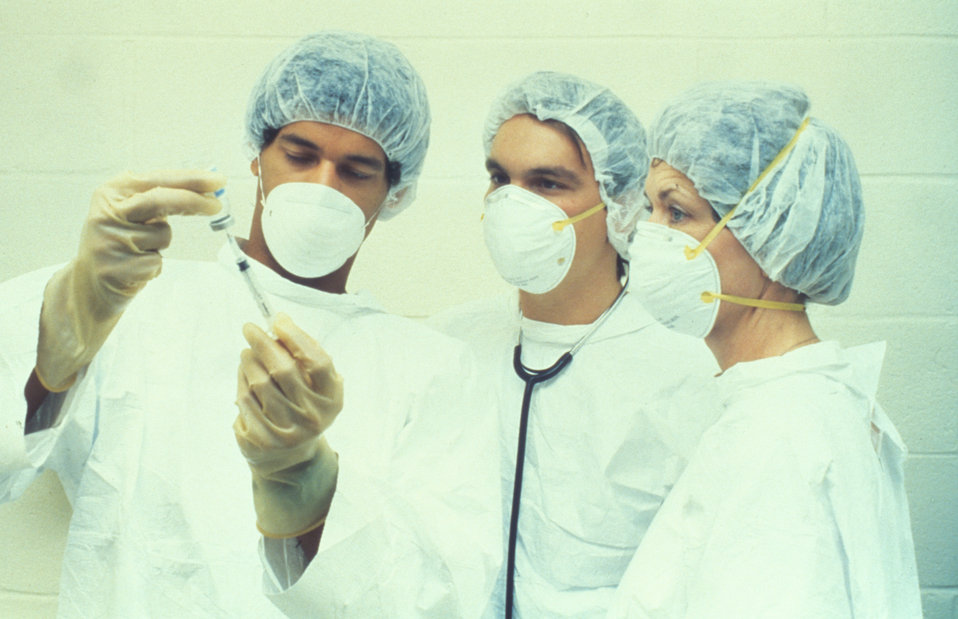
This image is from a book entitled 'A Day in the Life of a Medical Detective', by Sandra L. Ford, published by Time/Life, Inc.